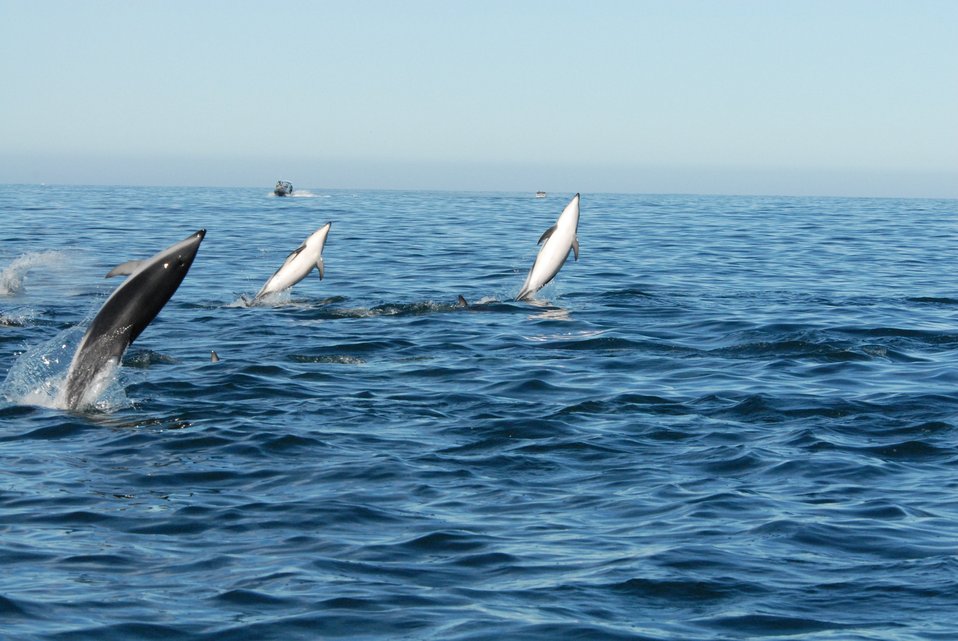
Dusky dolphin (Lagenorhynchus obscurus)